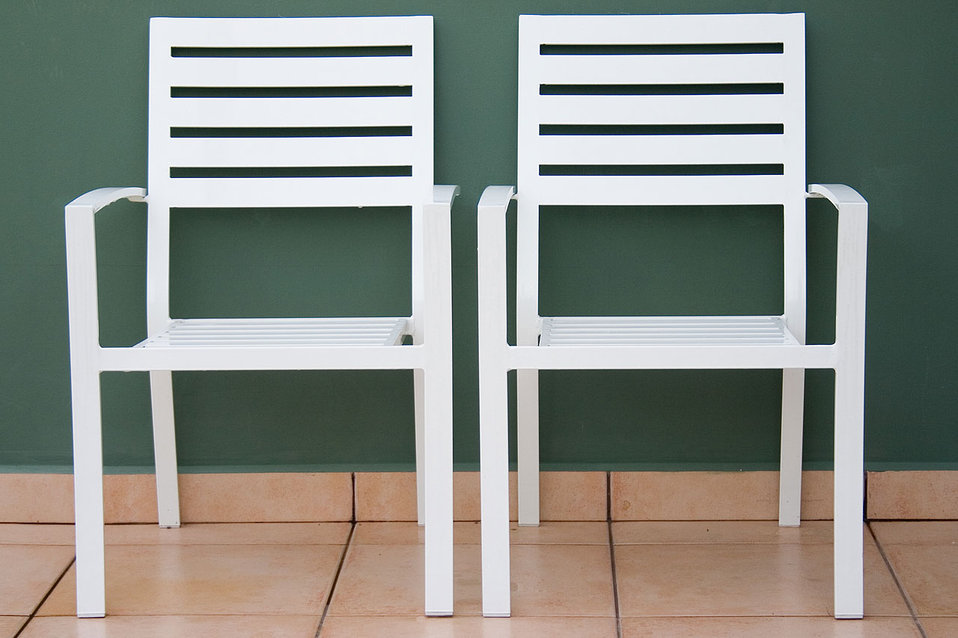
Two chairs

Two patio chairs.